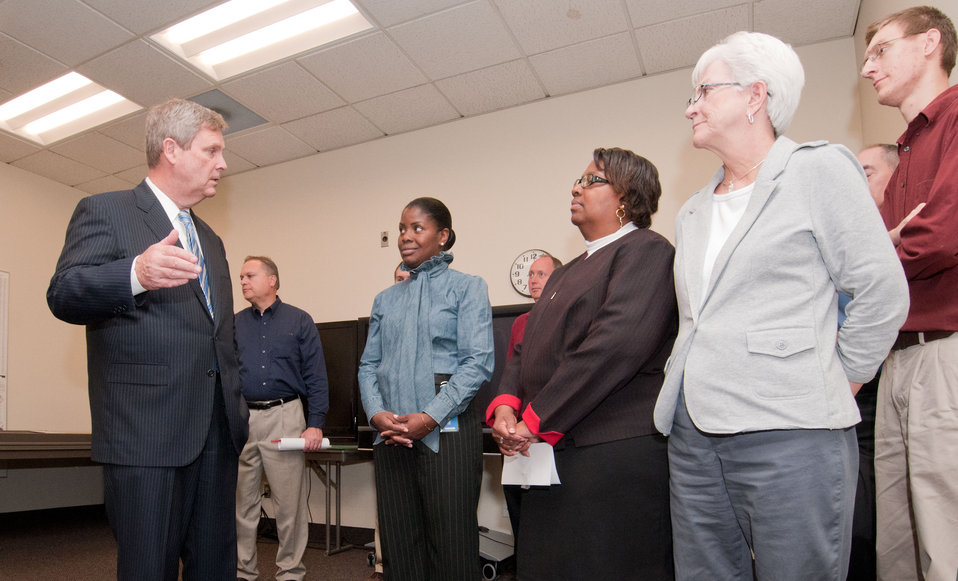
U.S. Department of Agriculture (USDA) Secretary Tom Vilsack (left) visited the employees of the National Agricultural Statistics Service in Springfield, IL, to talk about current and future cutbacks across the department, during his visit on Wednesday, November 2, 2011. Secretary Vilsack recognized efforts people have made throughout the department and that it is important that USDA employees continue to develop ways to do more with less. He then provided an open question and answer session for the employees.